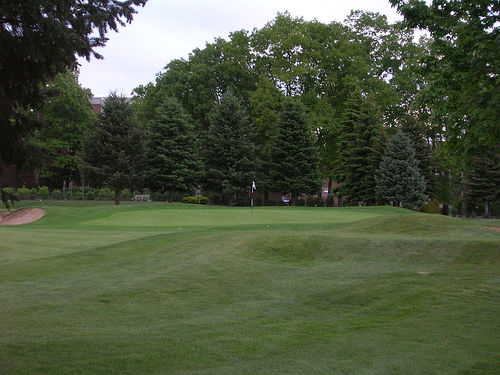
The 11th Green on the Penn State White Course taken in May 2005 by Sir Putts-a-lot. This view shows many of the changes to the golf course since its inception in 1926, including planting and growth of pine trees and the shrinking and narrowing of fairways and greens. Also shows abandoned bunker in the right middle of the picture.